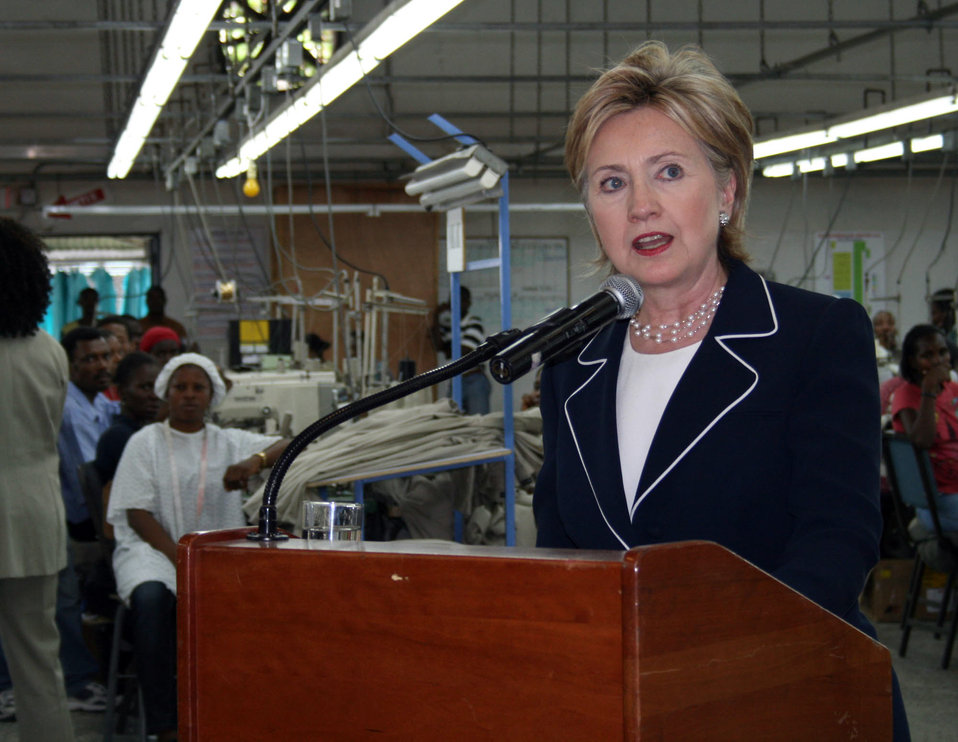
Secretary Clinton Visits Inter-American Woven Factory

U.S. Secretary of State Hillary Rodham Clinton speaks to the workers at the Inter-American Woven factory in Port-au-Prince April 16, 2009. Hope II legislation has created 11,000 jobs in Haiti.